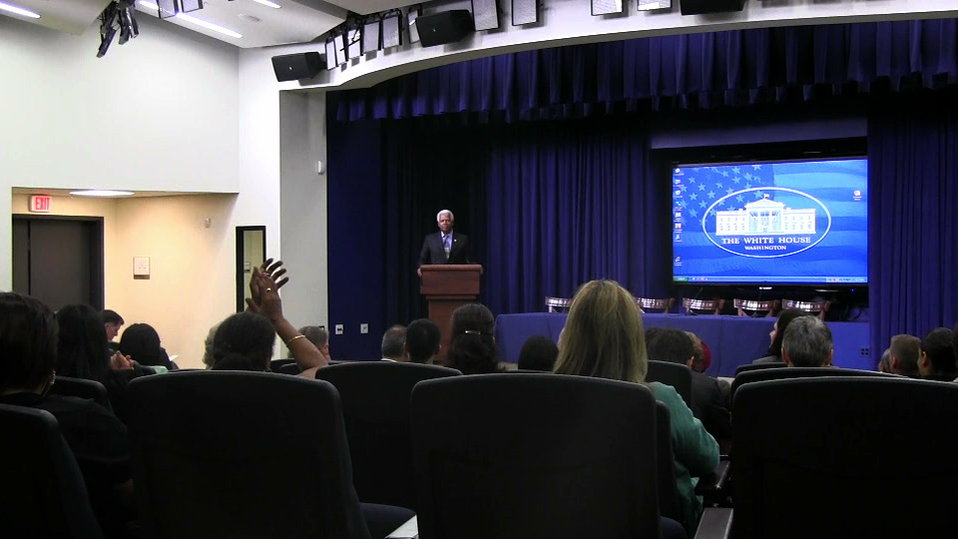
Johnson1